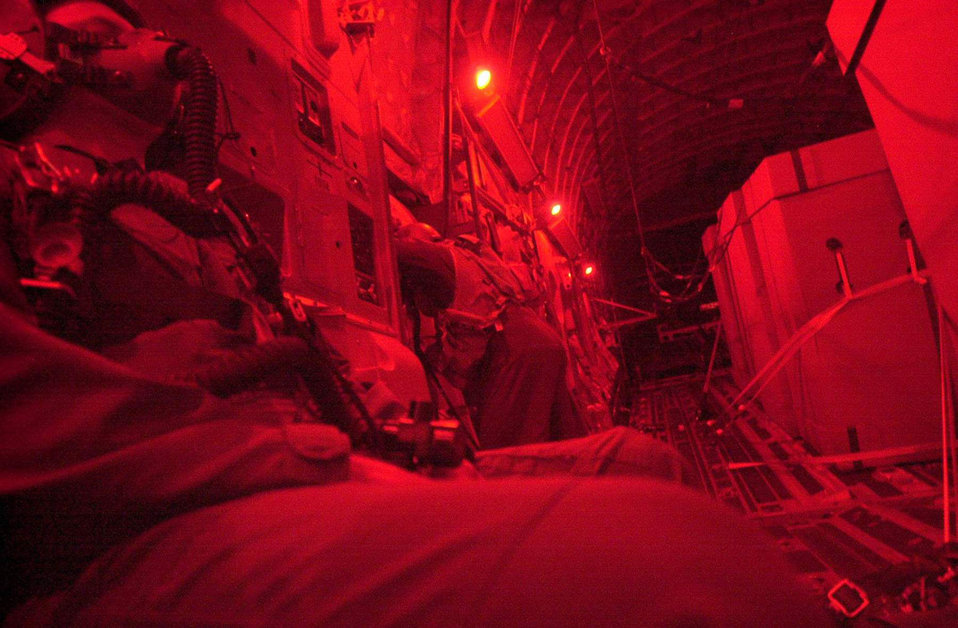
Ready to Go

OPERATION ENDURING FREEDOM -- U.S. Air Force crew members from Charleston Air Force Base, S.C., continue high altitude drops of HDRs (Humanitarian Daily Rations) from their C-17 Globemaster III somewhere over northern Afghanistan, Oct. 18. The C-17 dropped 42 TRIADS containing 17,220 HDRs. More than 500,000 HDRs have been dropped into Afghanistan since the humanitarian relief effort began.